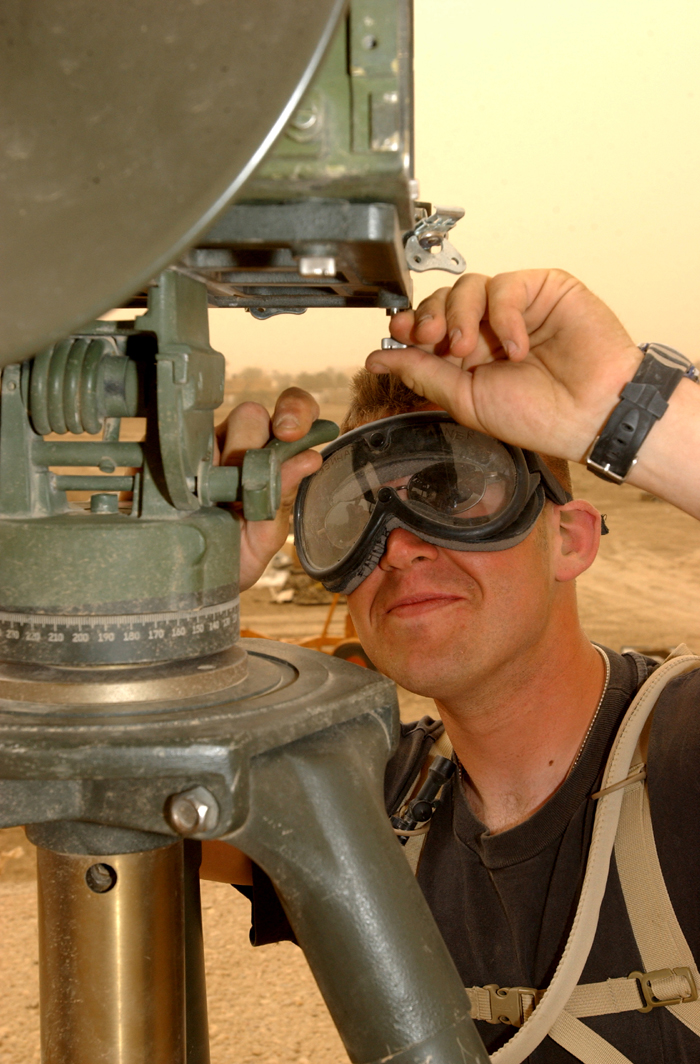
Setting up communications

OPERATION IRAQI FREEDOM -- Airman 1st Class Jason Fahner secures a microwave module atop a structure April 16 for line-of-sight communications at Tallil Air Base in southern Iraq. Fahner is a member of the 5th Combat Communications Group at Robins Air Force Base, Ga., which recently deployed to the base.